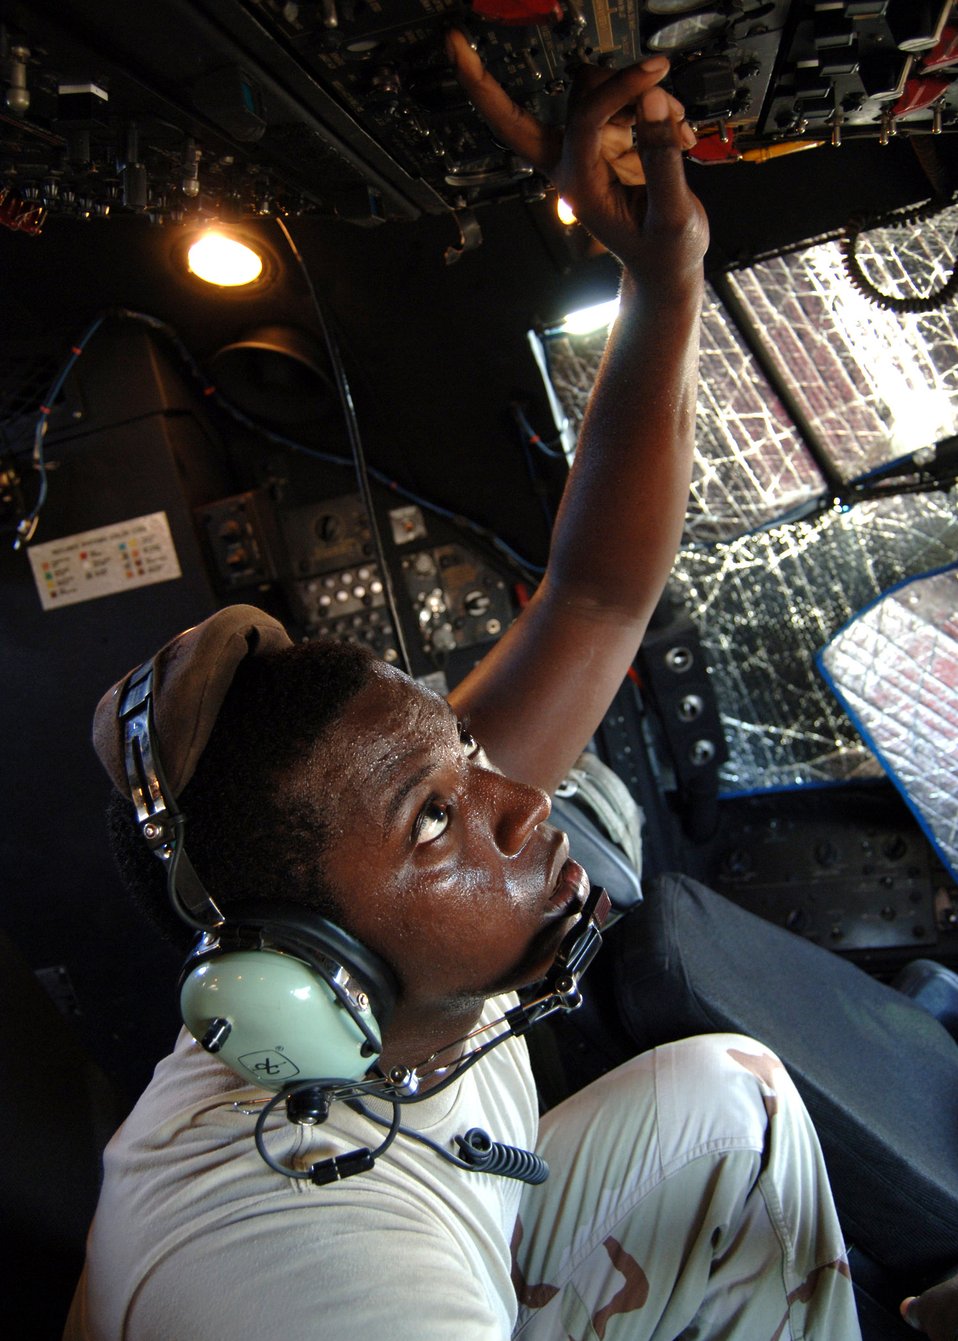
Preflight inspection

Staff Sgt. Freddie Bryant conducts a preflight inspection on a C-130 Hercules Oct. 22 at Camp Lemonier, Djibouti. Sergeant Bryant is a crew chief for the 81st Expeditionary Rescue Squadron.